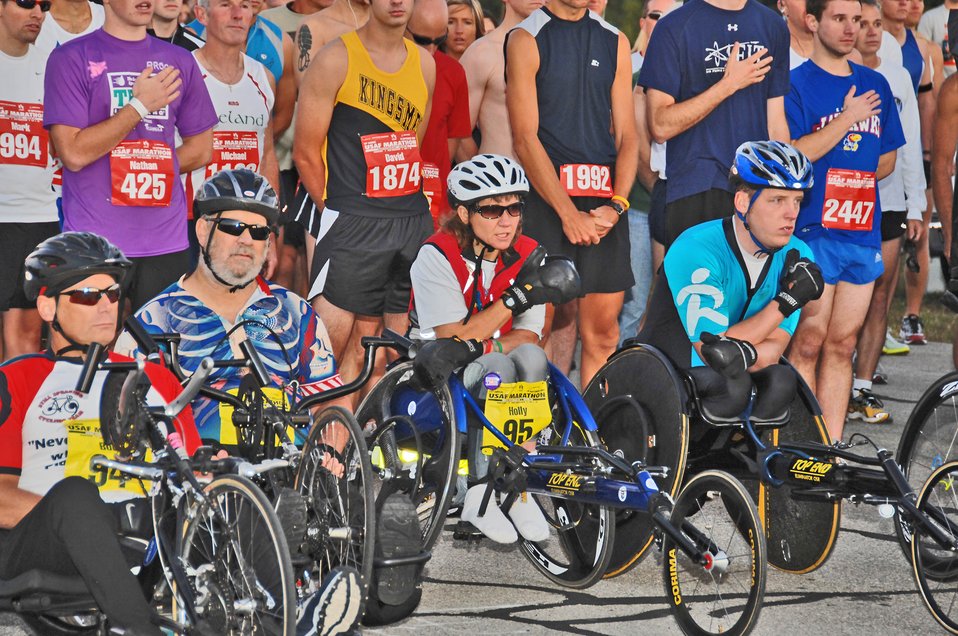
Let's get this marathon started!

Wheel racers and runners line up at the starting line during opening ceremonies for the U.S. Air Force Marathon Sept. 19, 2009, at Wright-Patterson Air Force Base, Ohio. A record 9,969 runners participated in events which included 5K and 10K races, a half marathon and full marathon.